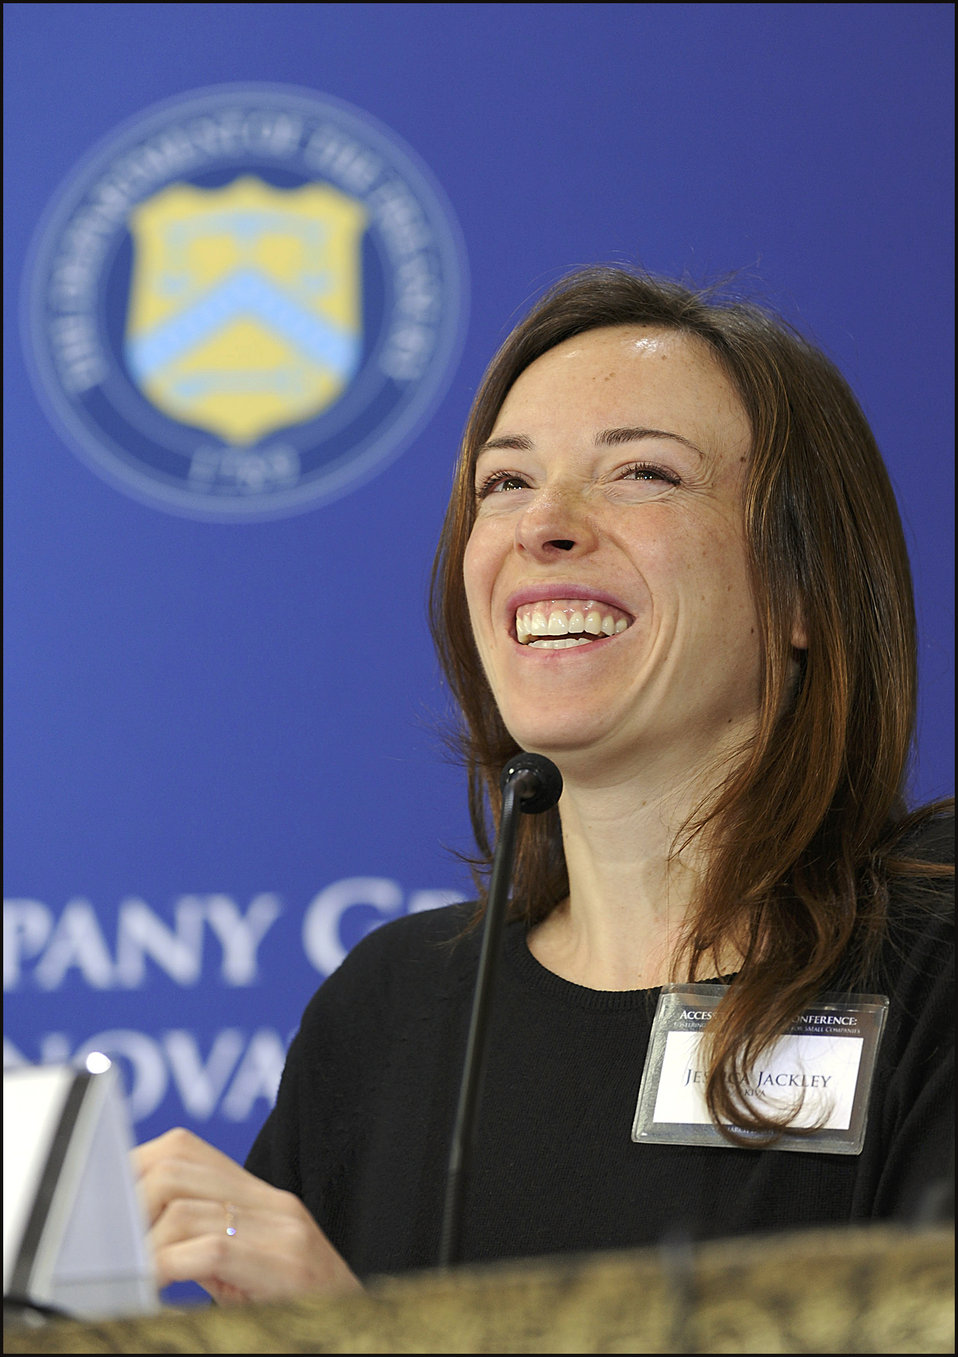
Access to Capital Conference

Jessica Jackley, CEO of Profounder and Founder of KIVA, discussed her experiences during the conference’s opening panel, moderated by Secretary Tim Geithner.